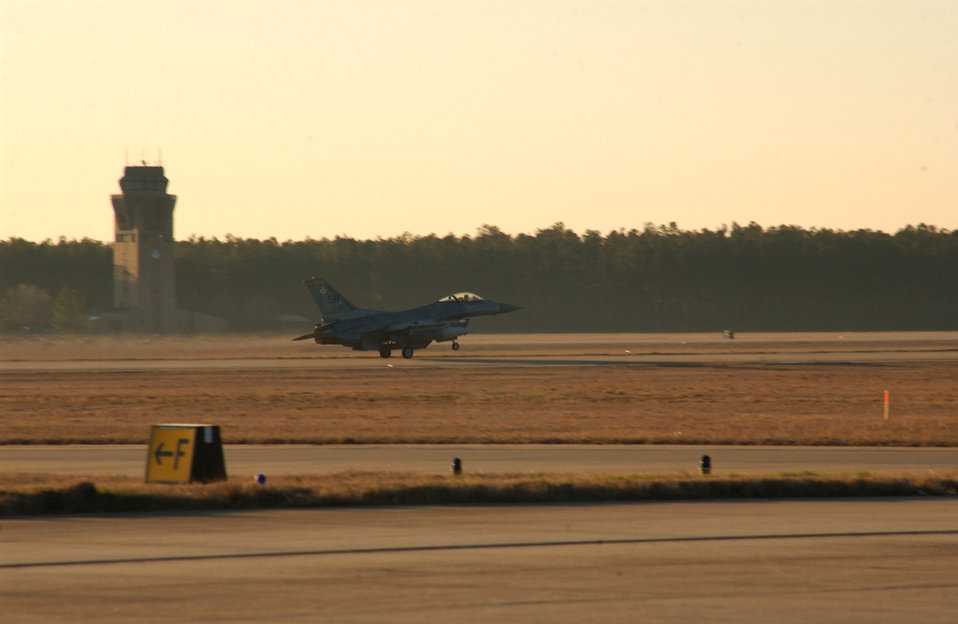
Exercising Falcons

An F-16 Fighting Falcon to the 20th Fighter Wing launches on a sortie in support of Operational Readiness Exercise Sea Lion 07-03 Jan. 26 at Shaw Air Force Base, S.C. Exercises prepare Airmen for future deployments. Shaw AFB is home to the Air Force?s largest combat F-16 wing -- the 20th FW -- whose mission is to provide, project and sustain combat-ready air forces.